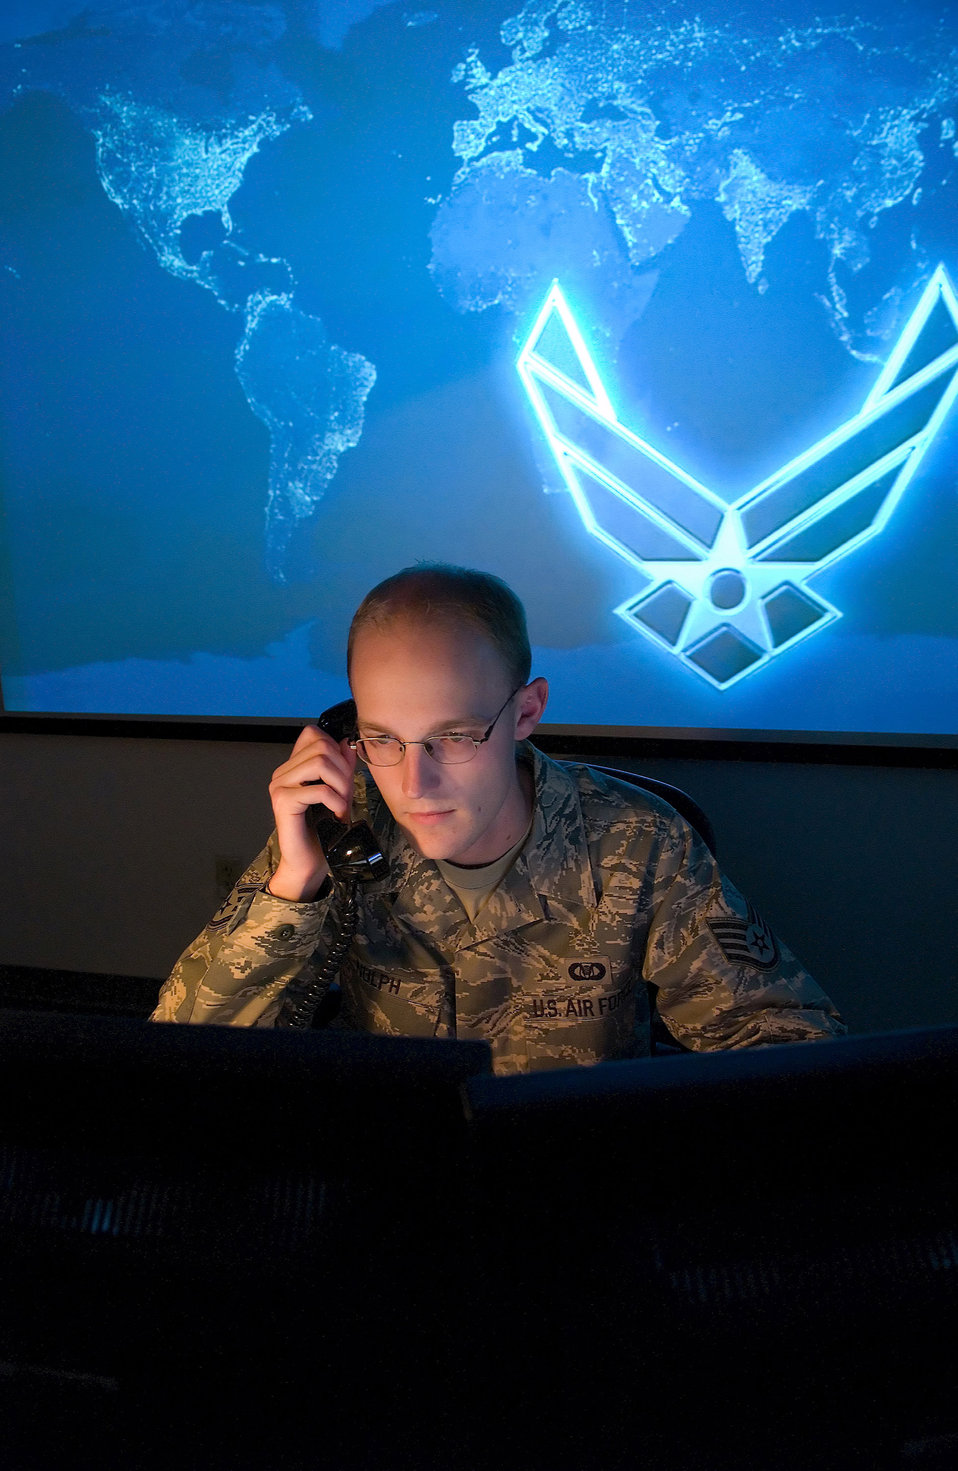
Command post keeps gears turning on global mobility

Staff Sgt. Alan Nulph, 436th Airlift Wing command post controller at Dover Air Force Base, Del., works behind the scenes to keep the base's global airlift mission operational. Controllers choreograph the movement of Airmen and equipment across the base.